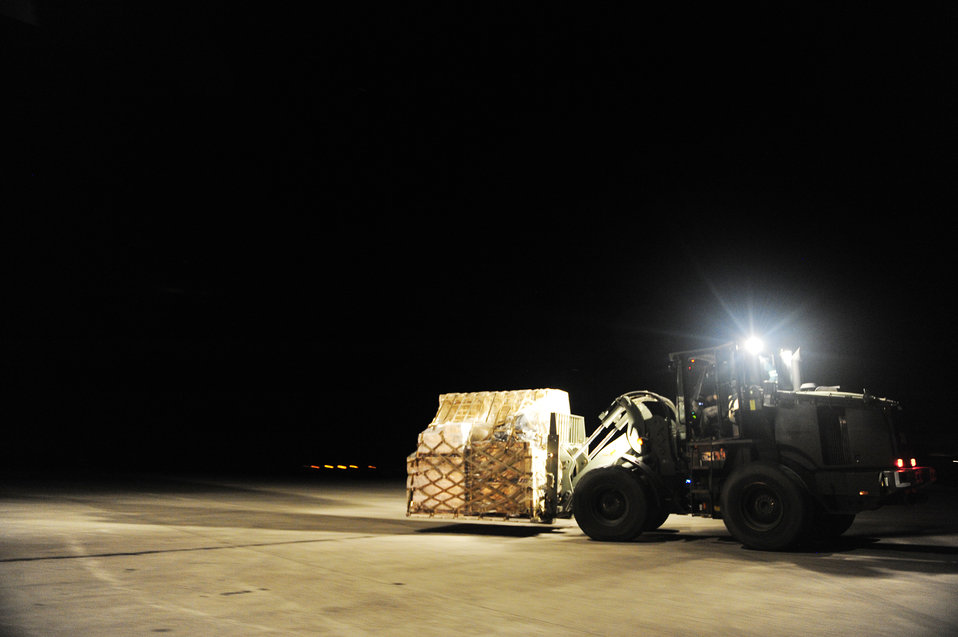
Haiti Relief Operations

Airmen from the 621st Contingency Response Wing at Joint Base McGuire-Dix-Lakehurst, N.J., unload cargo from a C-17 Globemaster III, Jan. 15, 2010, at the airport in Port-au-Prince, Haiti. The Airmen are supporting relief efforts to Haiti in the aftermath of the devastating earthquake. (